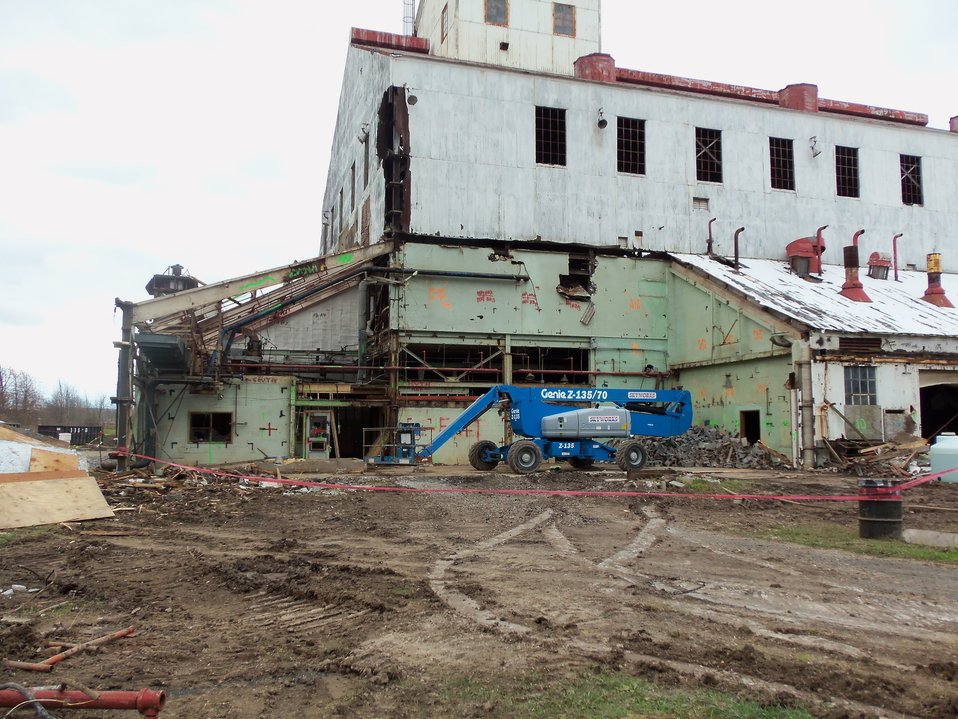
NFSS Building 401 siding removal.
Activities from the Niagara Falls Storage Site, which is associated with the former Lake Ontario Ordnance Works. Formerly Utilized Sites Remedial Action Program (FUSRAP), a program initiated in 1974 to identify, investigate and clean up or control sites that were part of the Nation's early atomic energy and weapons program. Activities at the sites that are eligible for FUSRAP were conducted by Manhattan Engineer District (MED) or the Atomic Energy Commission (AEC), both predecessors of the Department of Energy (DOE). The U.S. Army Corps of Engineers was assigned management of FUSRAP by Congress in 1997.